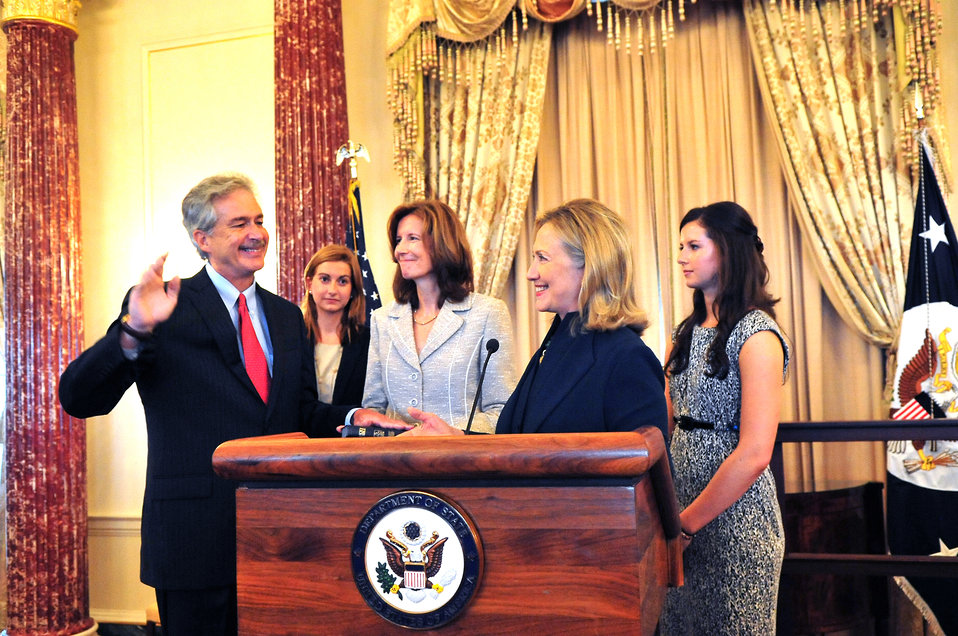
Secretary Clinton Officiates the Swearing-In Ceremony for Deputy Secretary Burns

U.S. Secretary of State Hillary Rodham Clinton officiates the swearing-in ceremony for Deputy Secretary Bill Burns at the U.S. Department of State in Washington, D.C., on September 8, 2011.